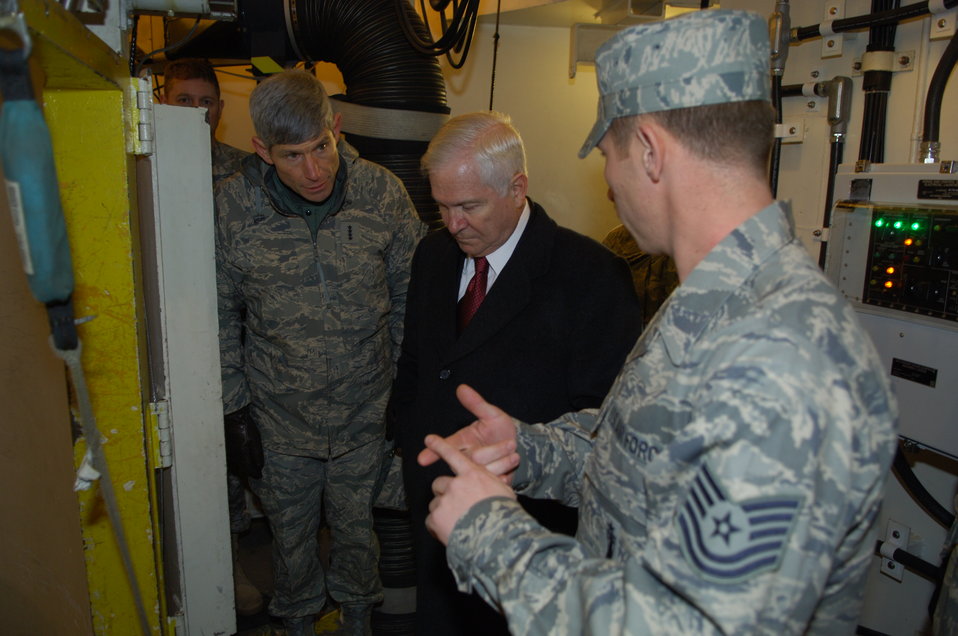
CSAF, SECDEF visit Minot Air Force Base

Tech. Sgt. Donald Waugh, 91st Missile Operations Squadron at Minot Air Force Base, N.D., briefs Secretary of Defense Robert Gates and Chief of Staff of the Air Force Gen. Norton Schwartz Dec. 1 on the electro mechanical technician's job inside the Uniform 01 launch facility.